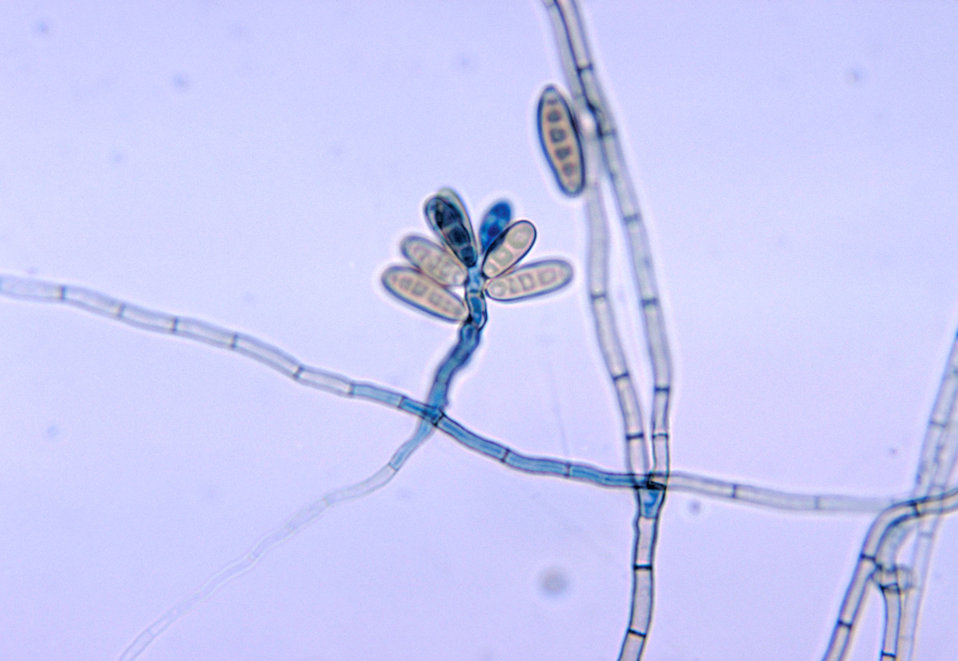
This micrograph depicts a conidia-laden conidiophore attached to a mycelium amongst adjacent mycelia.